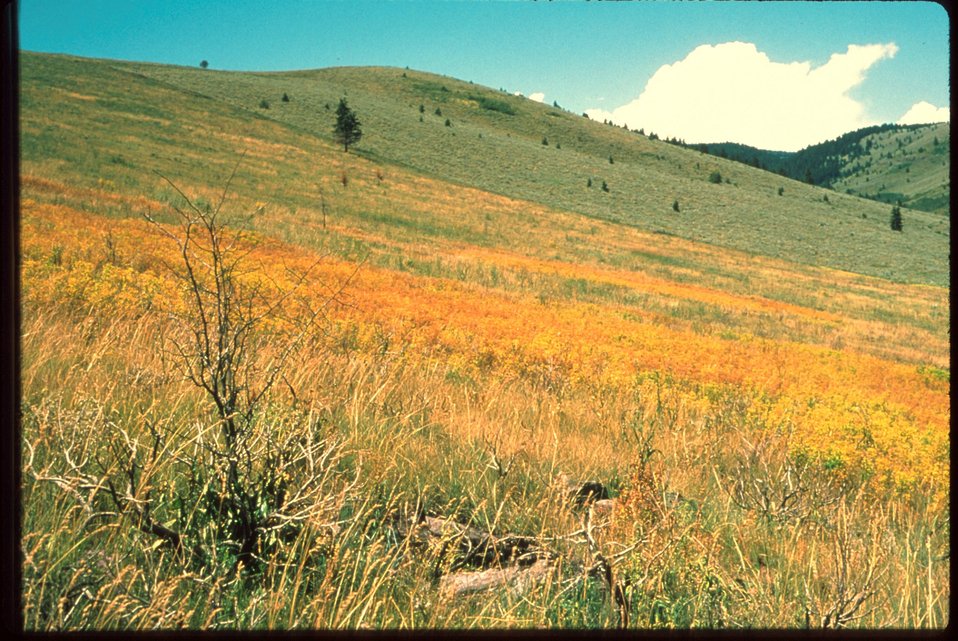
Leafy Spurge after a range fire Idaho vegetation Plants in BLM